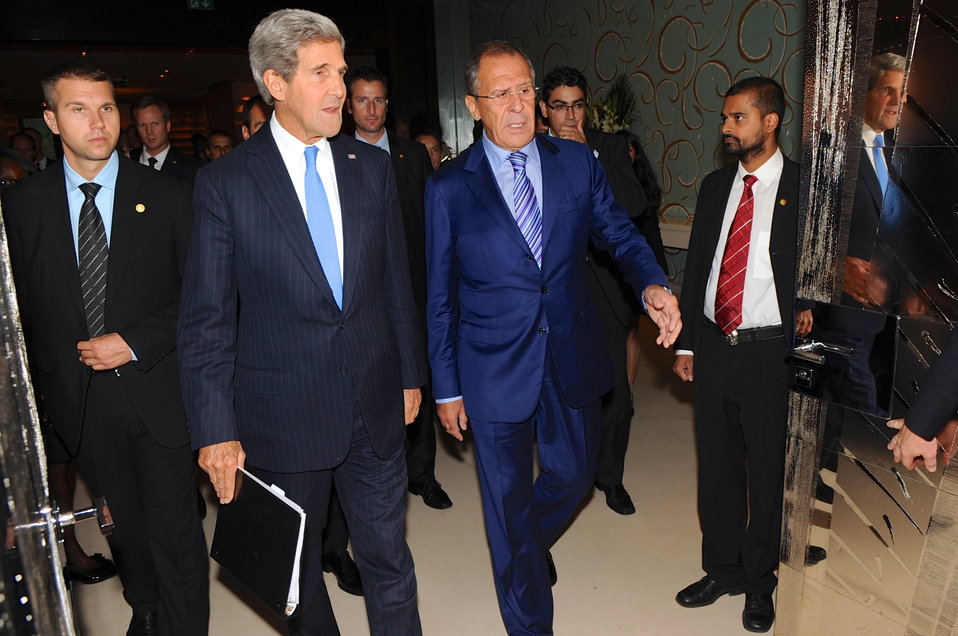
Secretary Kerry, Russian Foreign Minister Lavrov Prepare to Meet News Media

7:36 p.m., September 12, 2013 - U.S. Secretary of State John Kerry and his Russian counterpart, Foreign Minister Sergey Lavrov, head to meet reporters before their first negotiating session regarding the elimination of Syrian chemical weapons.